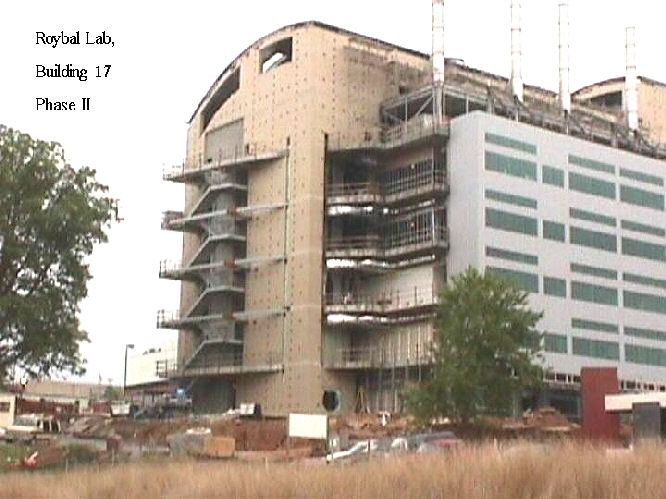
Roybal Lab, Building 17, Phase II.